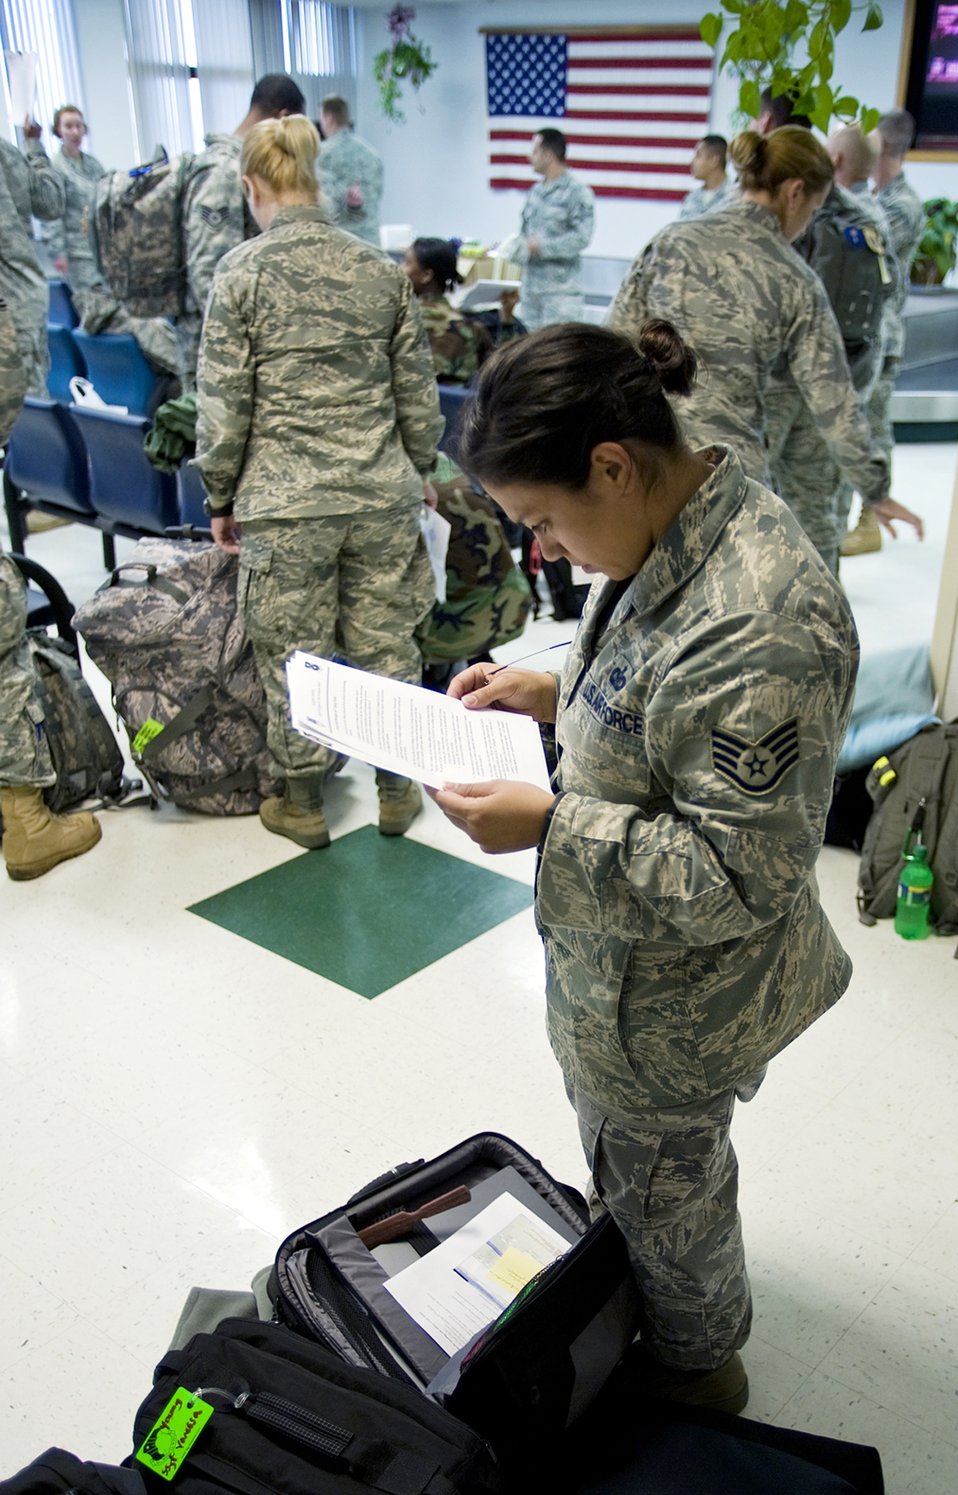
What's next?

Staff Sgt. Vanessa Young reads over her paperwork at Lackland Air Force Base, Texas, in preparation to deploy to Chile March 8, 2010. Sergeant Young is deploying in support of an Air Force Expeditionary Medical Support team who are going to Chile to aid local medics in response to victims of the Feb. 27 earthquake there. Sergeant Young is a public affairs specialist at Defense Media Activity-San Antonio.